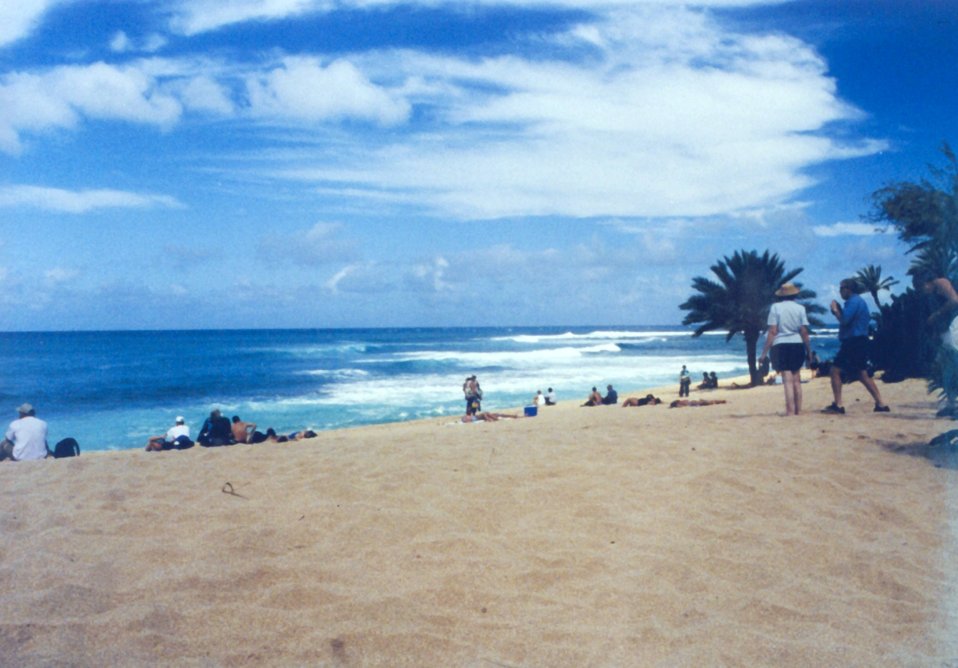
Sunset Beach on the North Shore.